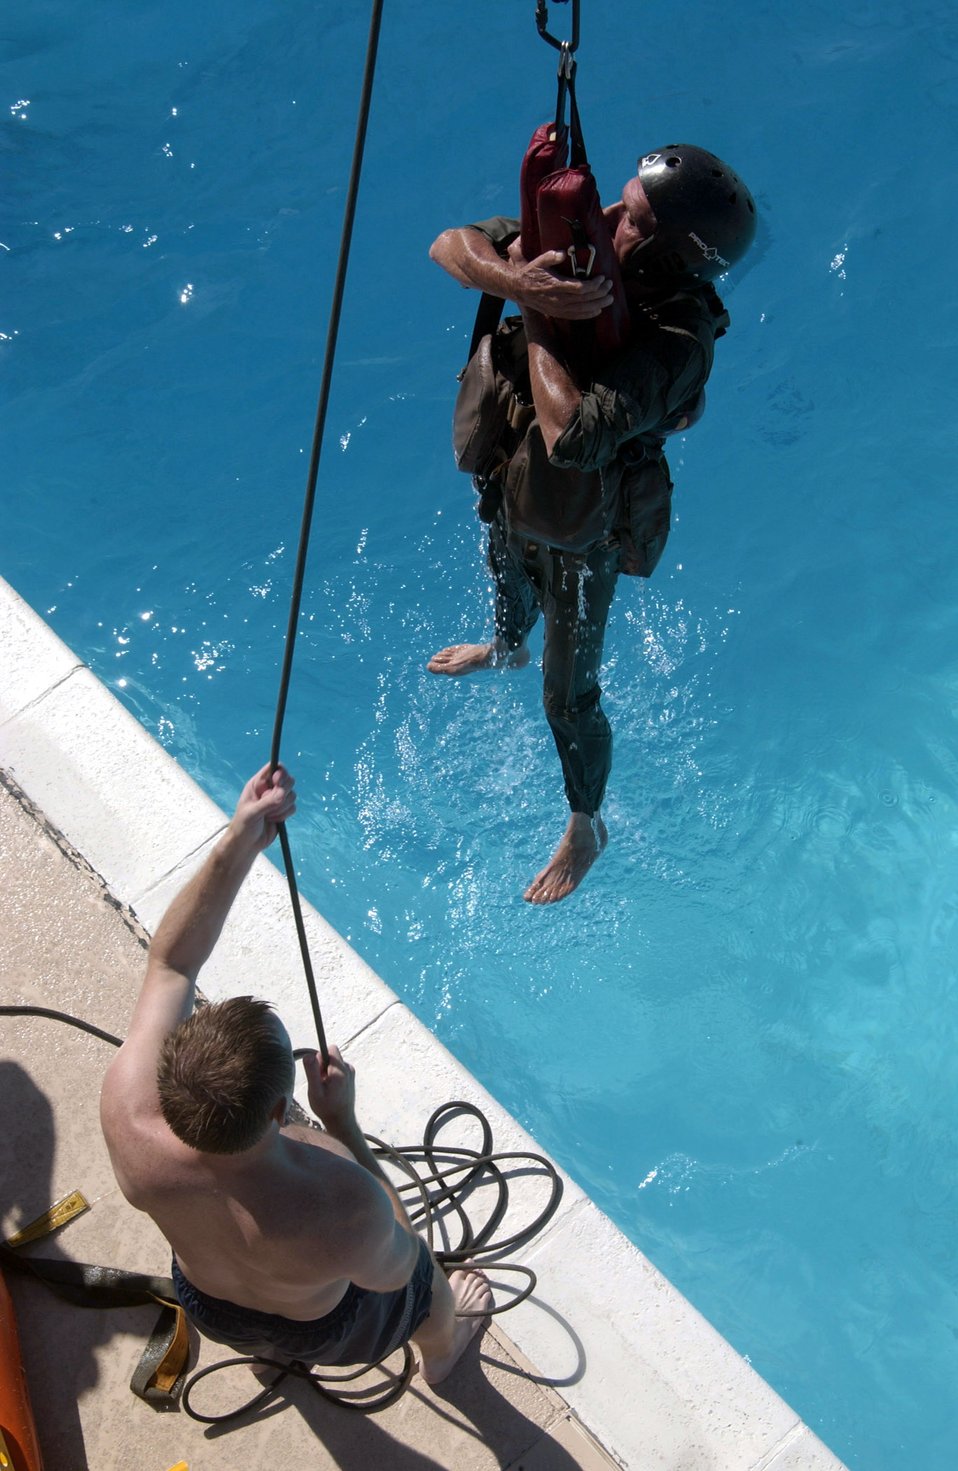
Practicing to be safe in the water

Staff Sgt. Michael Nettleingham hoists Army Chief Warrant Officer Ron Stone out of the water during a simulated helicopter rescue. Sergeant Nettleingham is a survival, evasion, resistance and escape, or SERE, instructor at Nellis Air Force Base, Nev. The Army National Guardsmen, an OH-58 Scout maintenance officer, was taking his annual water survival training.